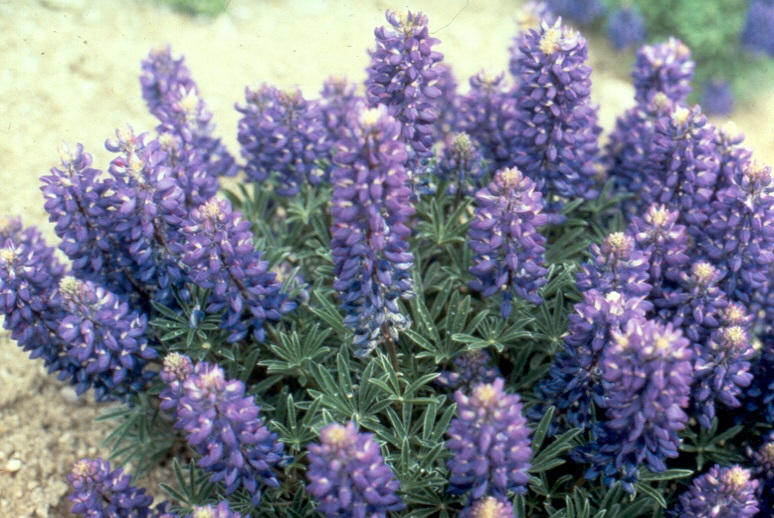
Lupine Salmon FIeld Office UCSC Upper Columbia Salmon Clearwater District